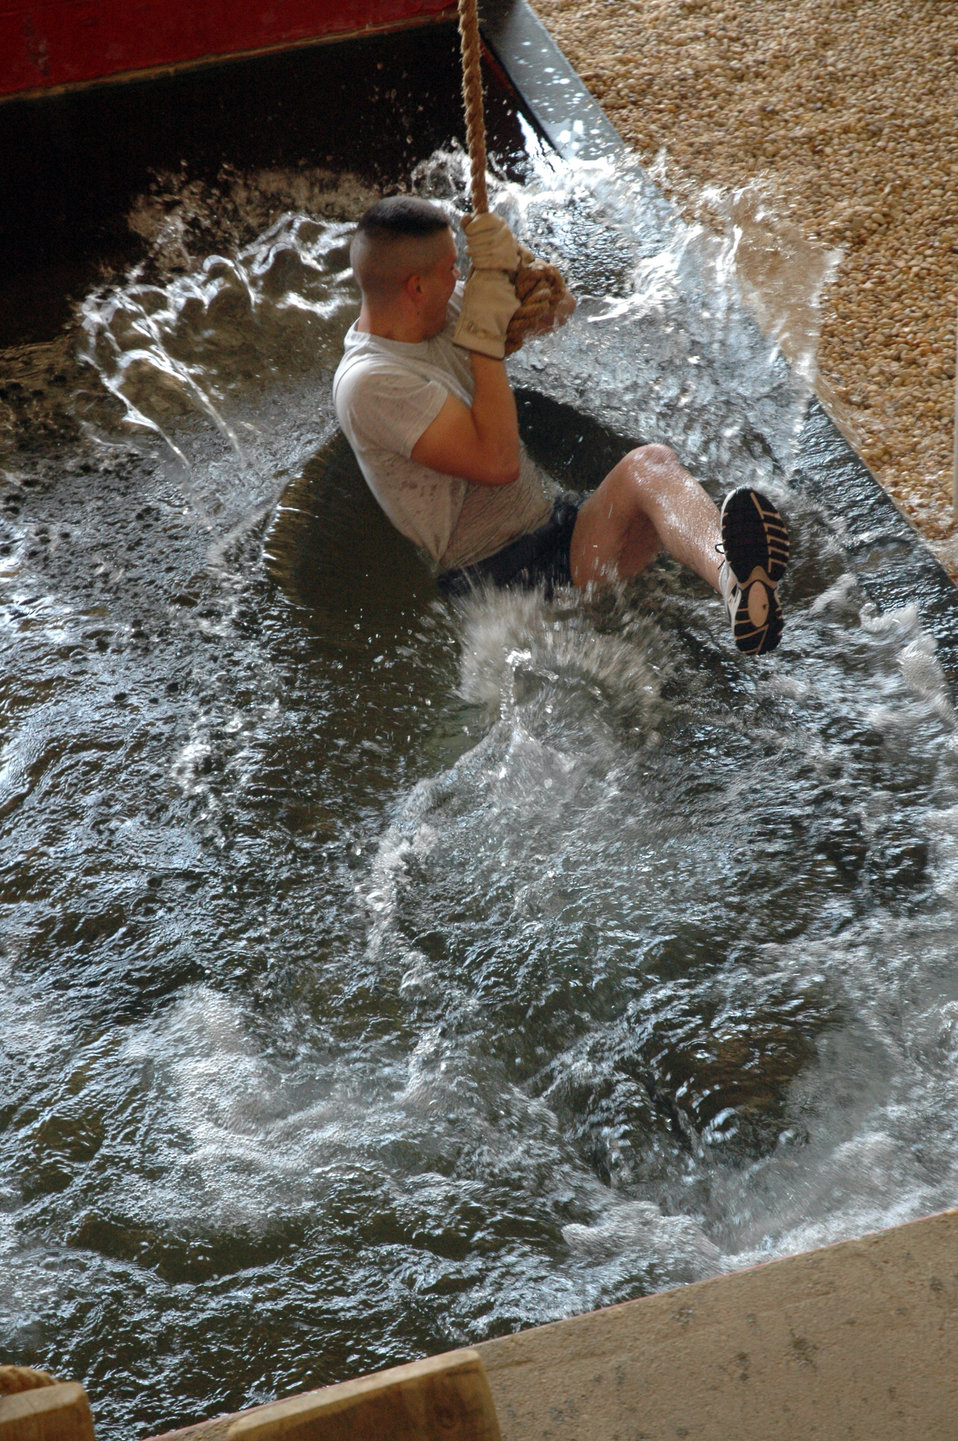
Drill team prepares for upcoming drill season

Airman 1st Class Michael Courtright falls in the water on an obstacle during a leadership reaction course March 30 at Maxwell Air Force Base, Ala. The traveling component of the Air Force Honor Guard, the drill team serves as Air Force ambassadors to recruit, retain and inspire Airmen around the globe. Airman Courtright is an Air Force Honor Guard drill team member.